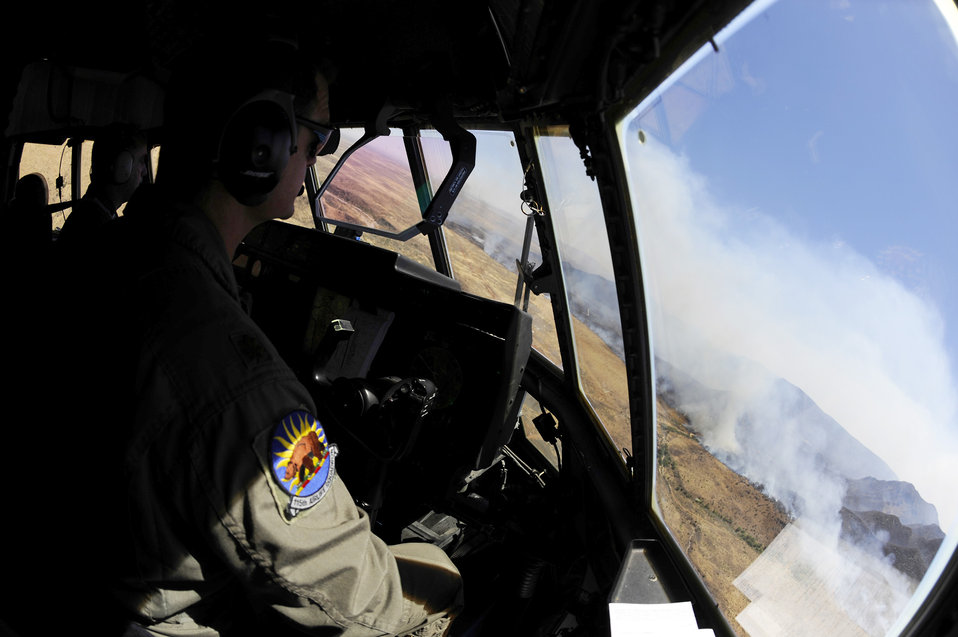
Texas Wildfires

Maj. Kevin DeHart prepares to drop fire retardant from a C-130 Hercules April 27, 2011, onto a West Texas wildfire. The wildfires have spread across parts of Texas and have burned more than 1,000 square miles of land. Major DeHart is assigned to the California Air National Guard?s 115th Airlift Squadron.